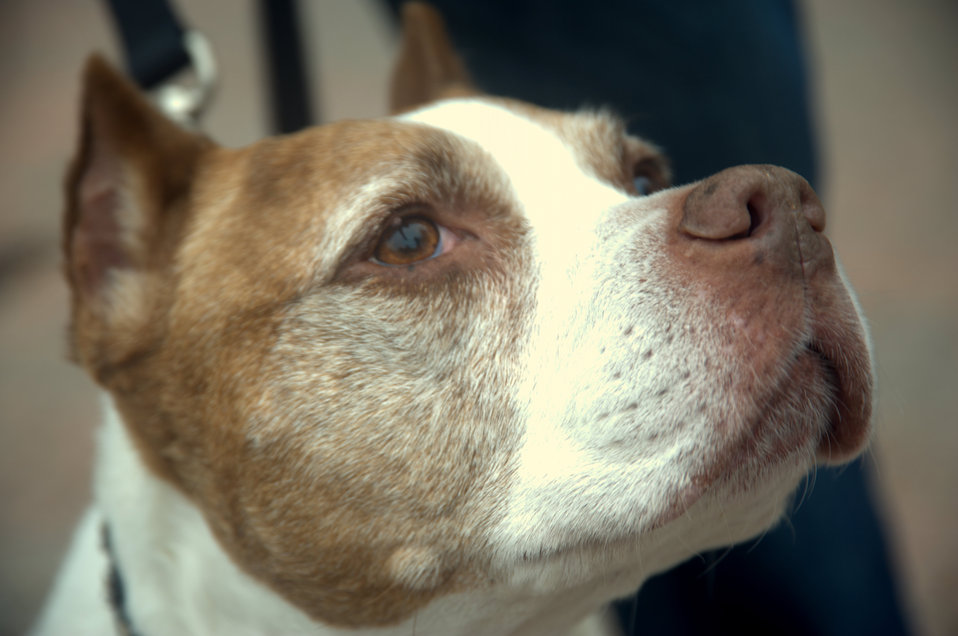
A life for a life

Cheyenne belongs to former Senior Airman David Sharpe, the founder of Pets 2 Vets. Sharpe adopted Cheyenne from a pit bull rescue when she was just a few weeks old. She has been with Sharpe for more than 10 years and has helped him cope with depression and post-traumatic stress disorder.